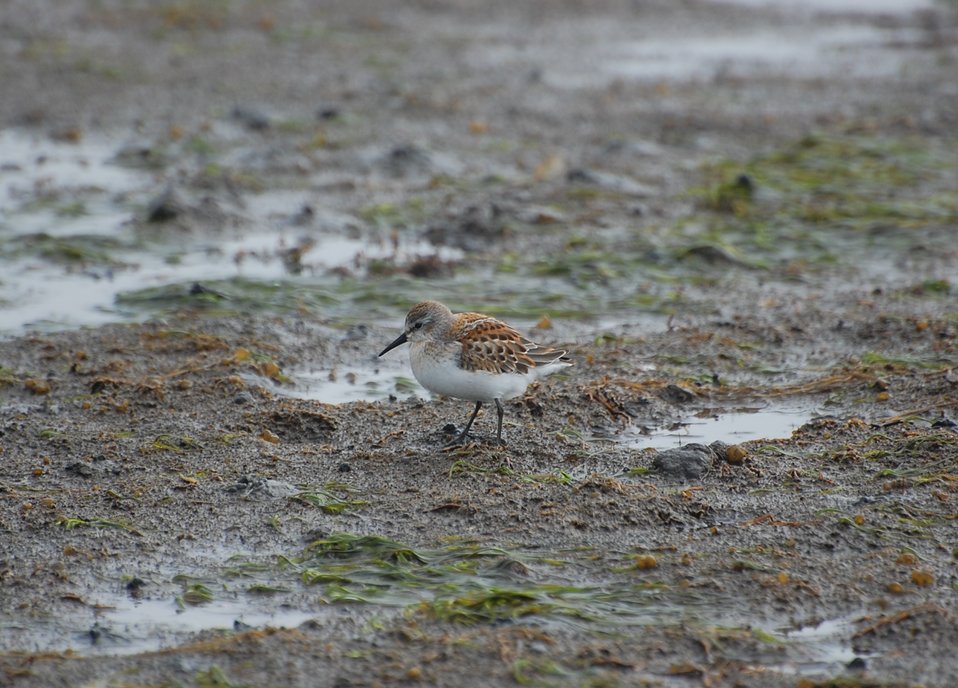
Juvenile Western Sandpiper

Kinzarof Lagoon, Izembek National Wildlife Refuge
Photo by Kristine Sowl,
USFWS, Public Domain